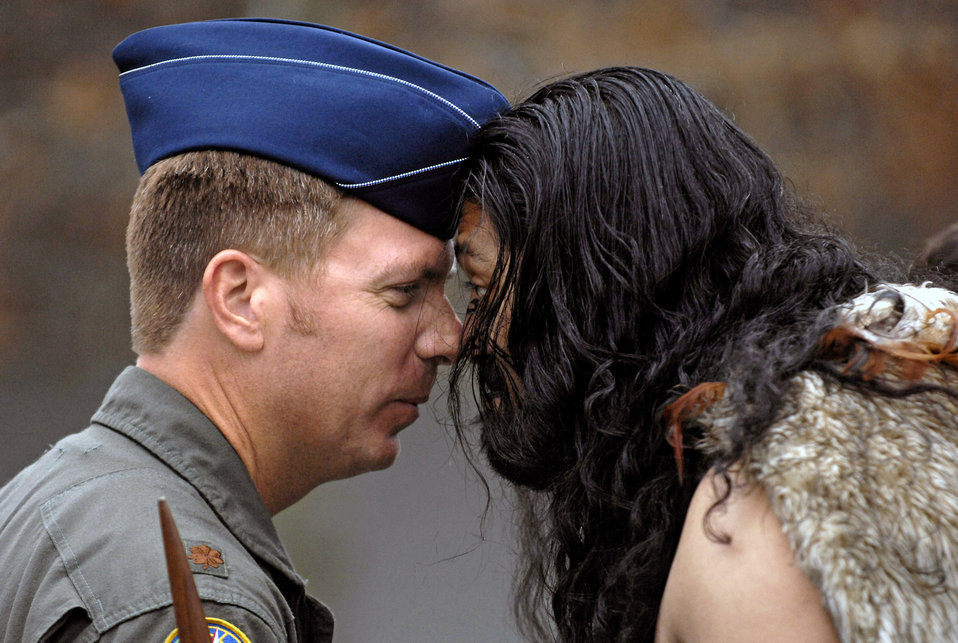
-- Maori welcome Airmen to New Zealand

Maj. Bill Eberhardt touches noses with a Maori warrior during a Powhiri, or welcoming ceremony Aug. 18 at Christchurch, New Zealand. Airmen from McChord AFB, Wash., are at Christchurch to begin the annual winter fly-in supporting the Antarctic program at McMurdo Station, Antarctica.